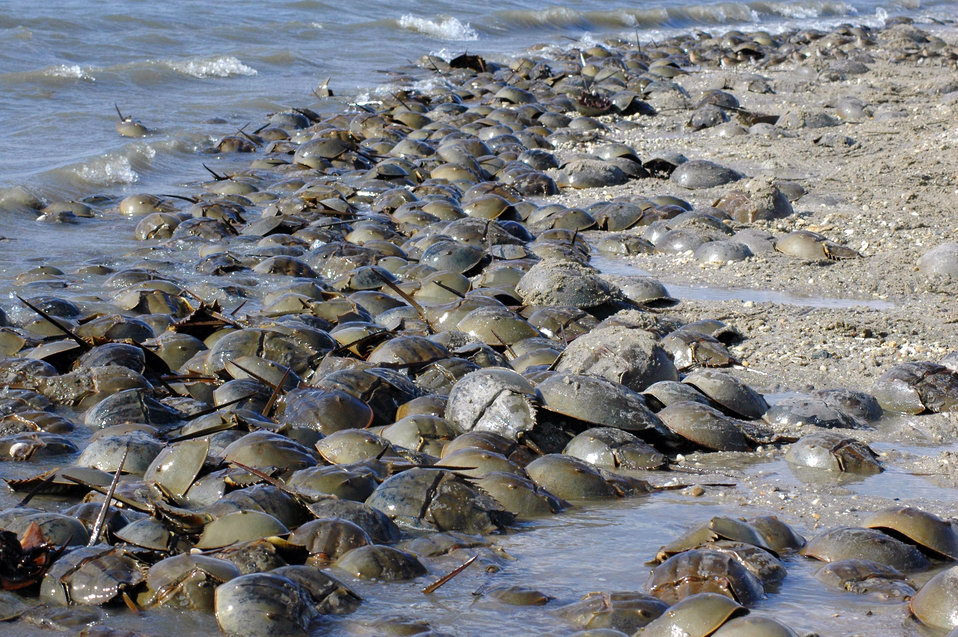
Horseshoe Crabs

Mispillion Harbor, Delaware.